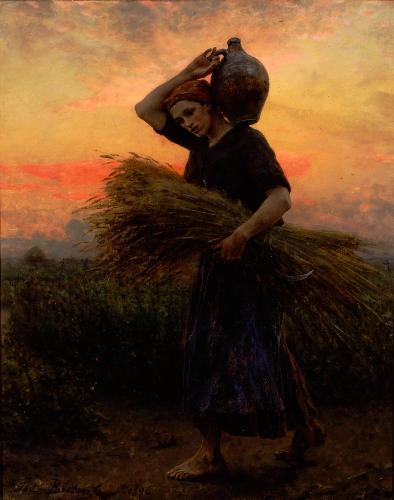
'Dawn', oil on canvas painting by Jules Breton, 1896, Carnegie Museum of Art, Pittsburgh